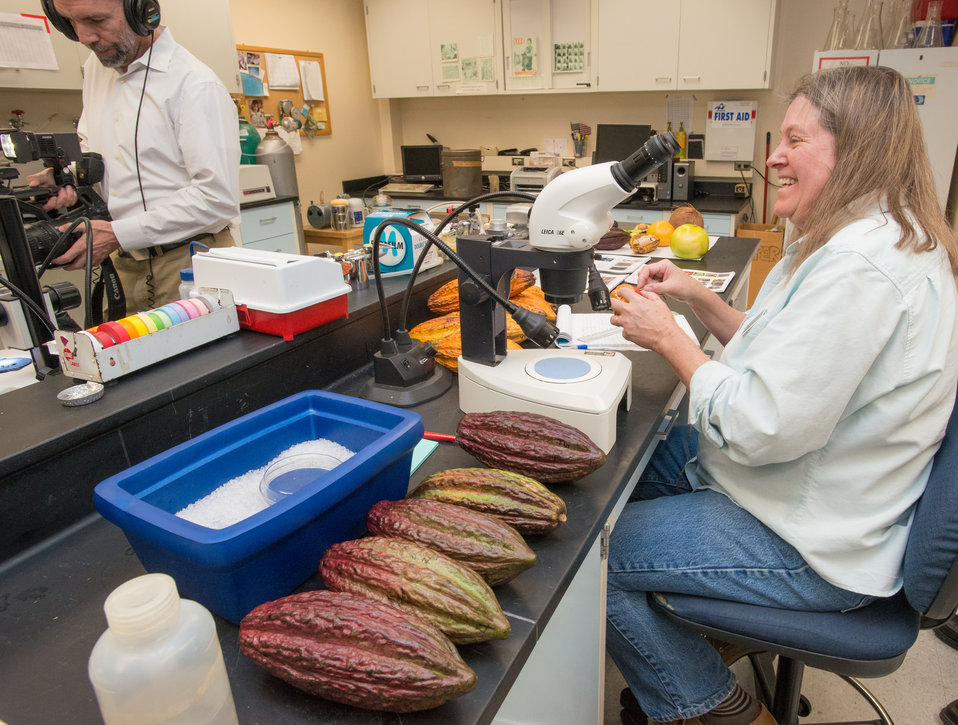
U.S. Department of Agriculture (USDA), Agriculture Research Service (ARS), National Center for Genetic Resources Preservation (NCGRP), Plant Germplasm Preservation Research Unit (PGPRU), Plant Physiologist Jennifer Crane, right, works on biophysics seed quality with the cacao fruit, as news media crews move through the laboratory, in Ft. Collins, CO, on Wednesday, Nov. 6, 2013.